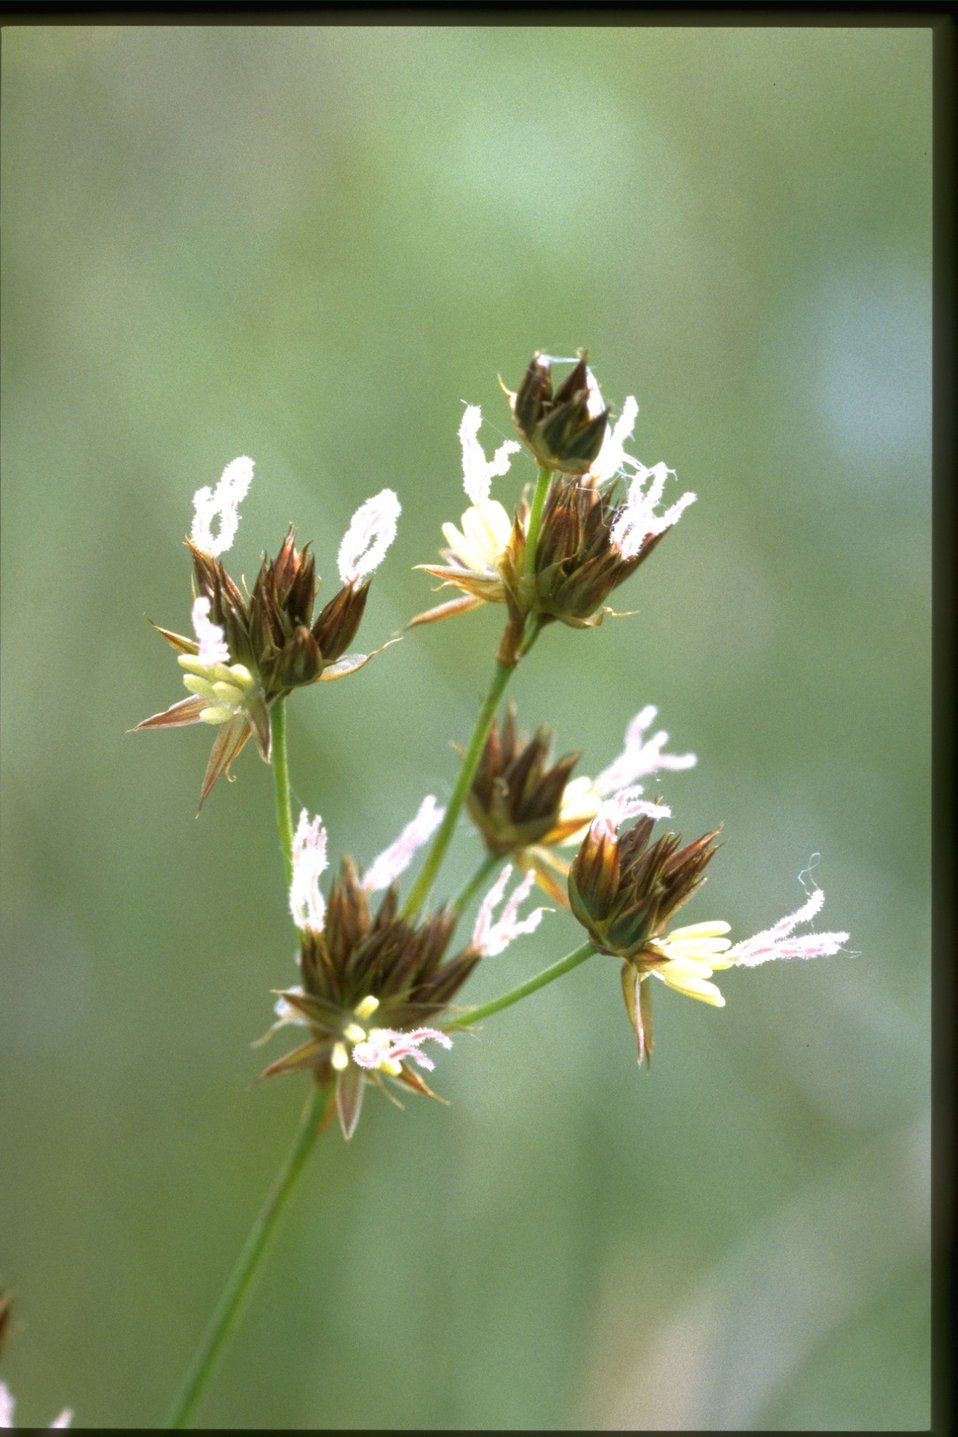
Closeup shot of Luncus.